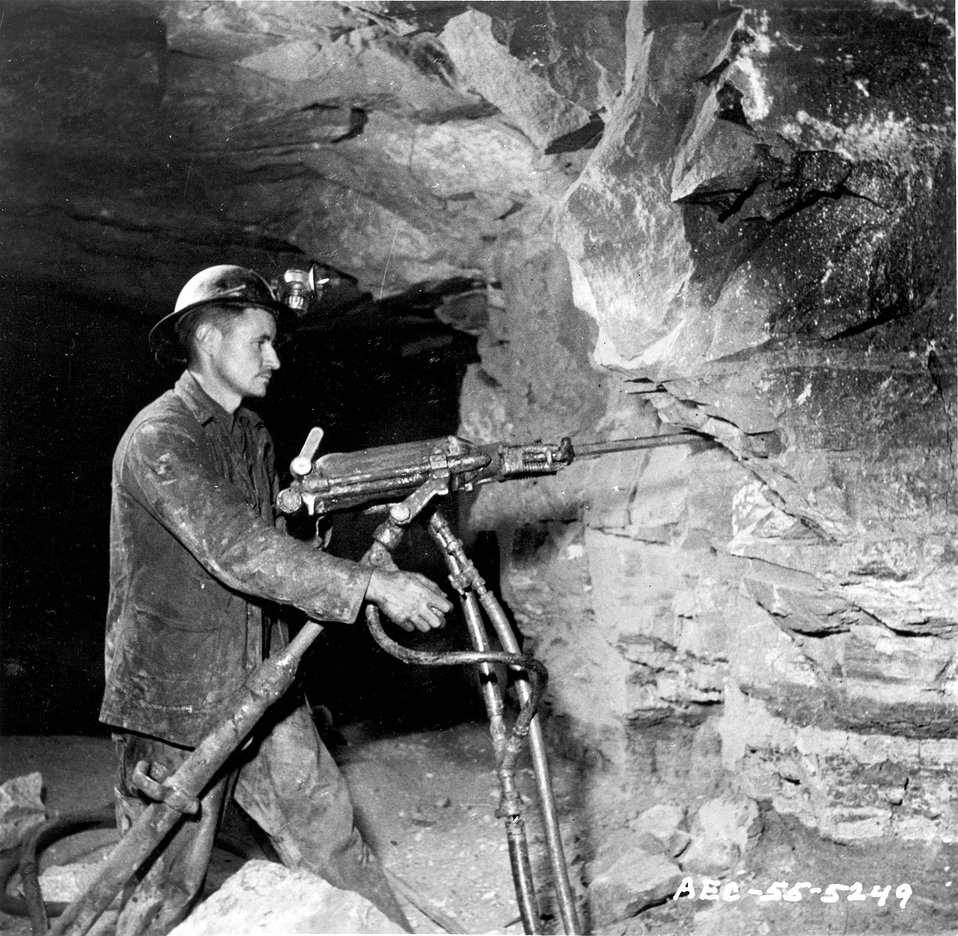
In mining uranium, the procedure is to follow the ore body in its wanderings through many tons of waste rock. c. 1955